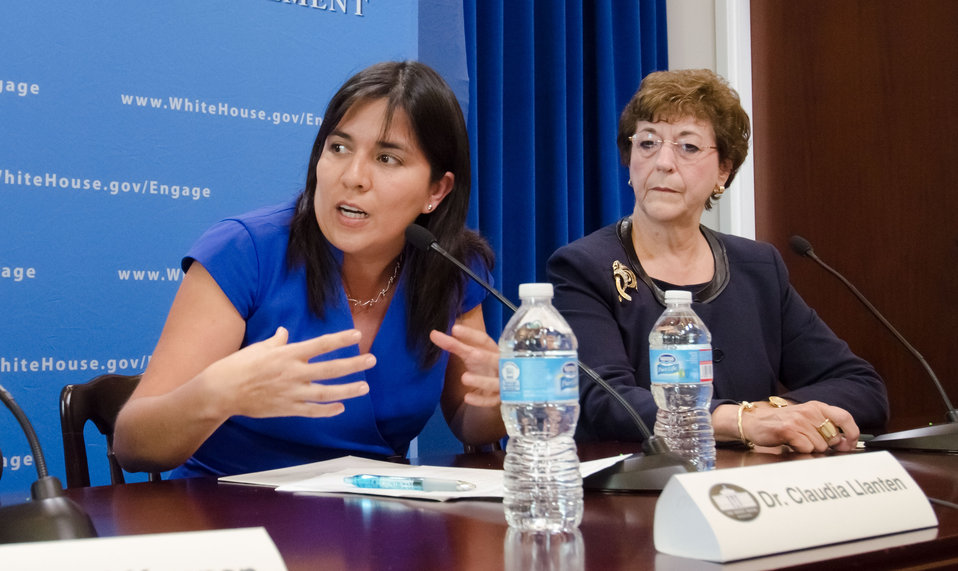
Catholic Medical Mission Board Project Director Dr. Claudia Llanten talked about food sources situations in Peru, during an event her work and ten other honorees recognized for her efforts to reduce hunger and increase food security in the U.S. and internationally at the White House Champions of Change Strengthening Food Security at Home and Abroad Event held at the White House on Thursday, September 6, 2012, in Washington, D.C.